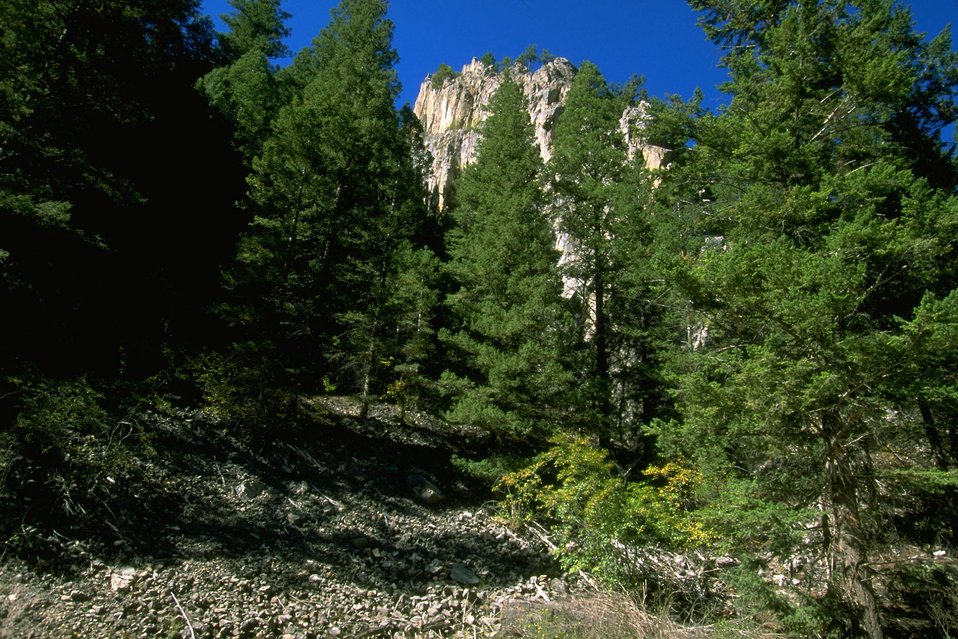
Rattler Gulch-Limestone Cliffs ACEC (area of critical environmental concern)